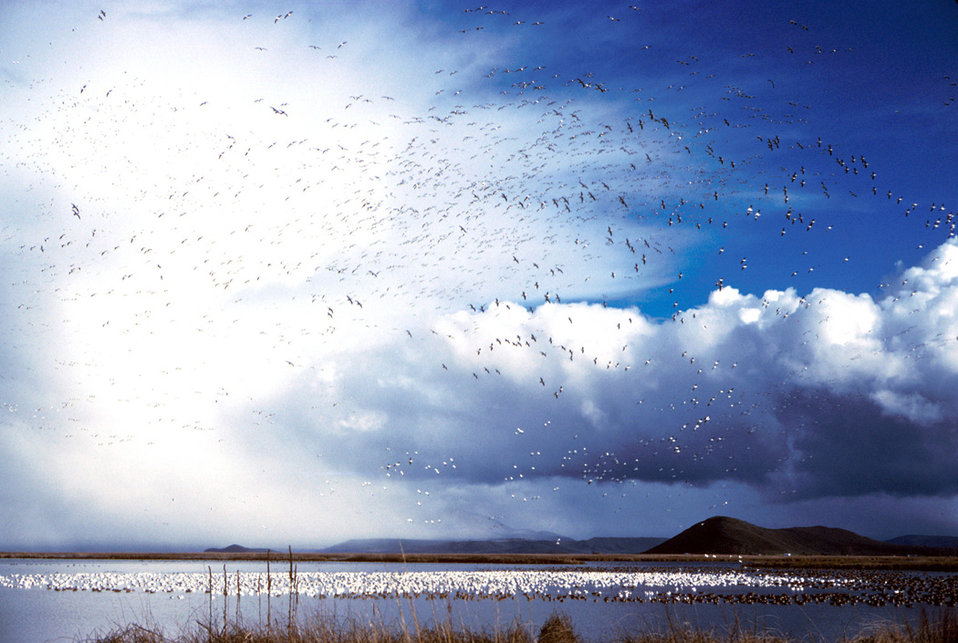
clouds and birds, Lower Klamath Refuge

Lower Klamath National Wildlife Refuge, CA-OR border
Photo: Tupper Ansel Blake
Lower Klamath National Wildlife Refuge, established by Pres. Teddy Roosevelt in 1908, was the nation's first waterfowl refuge.